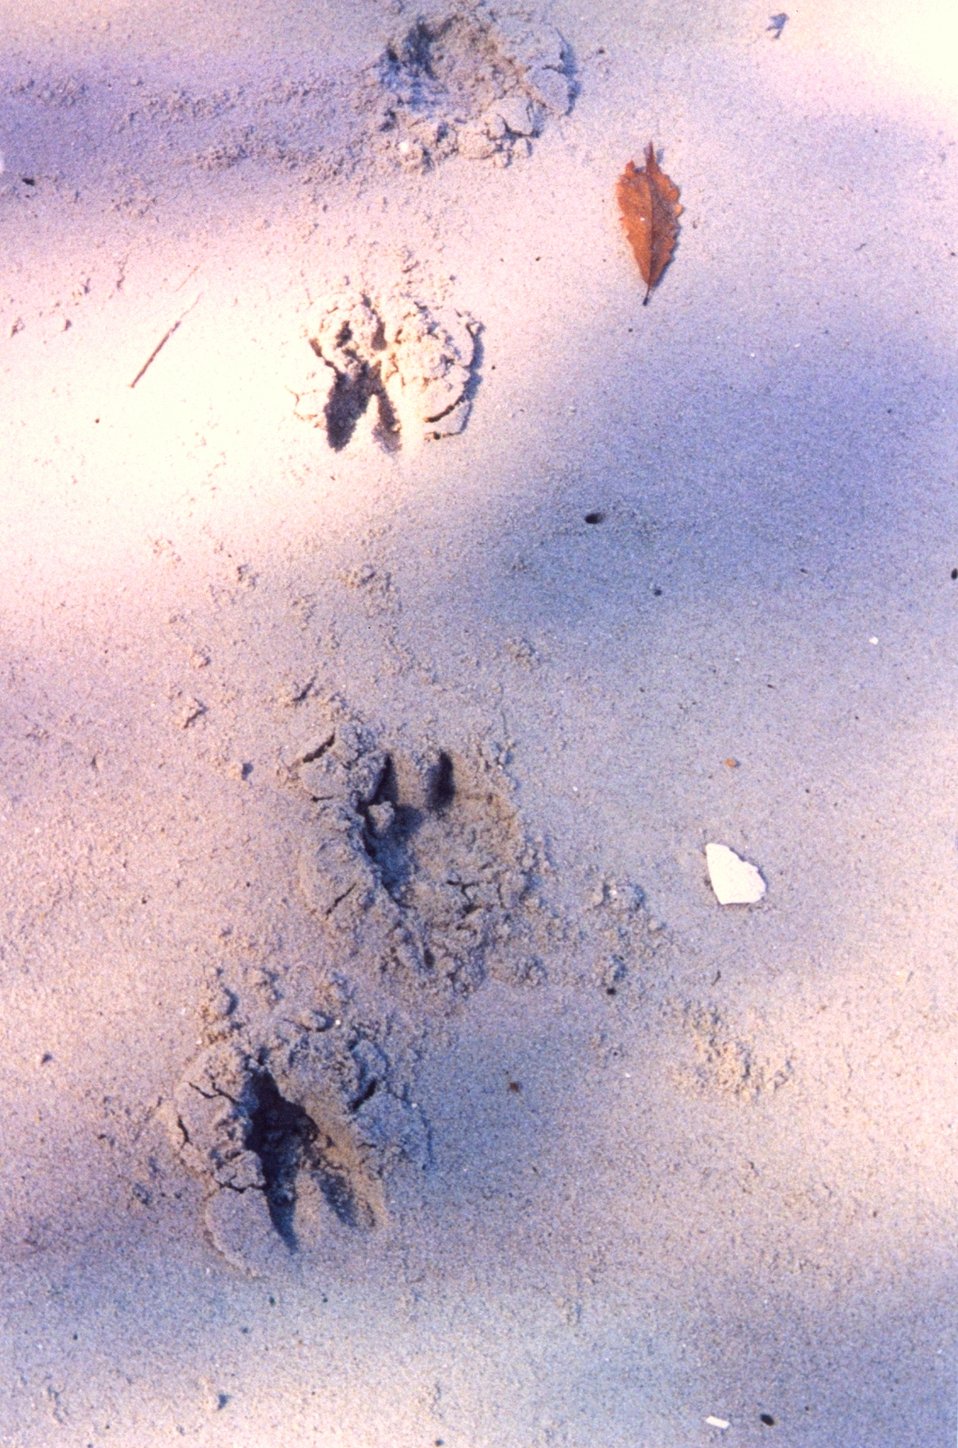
Deer tracks on the beach.